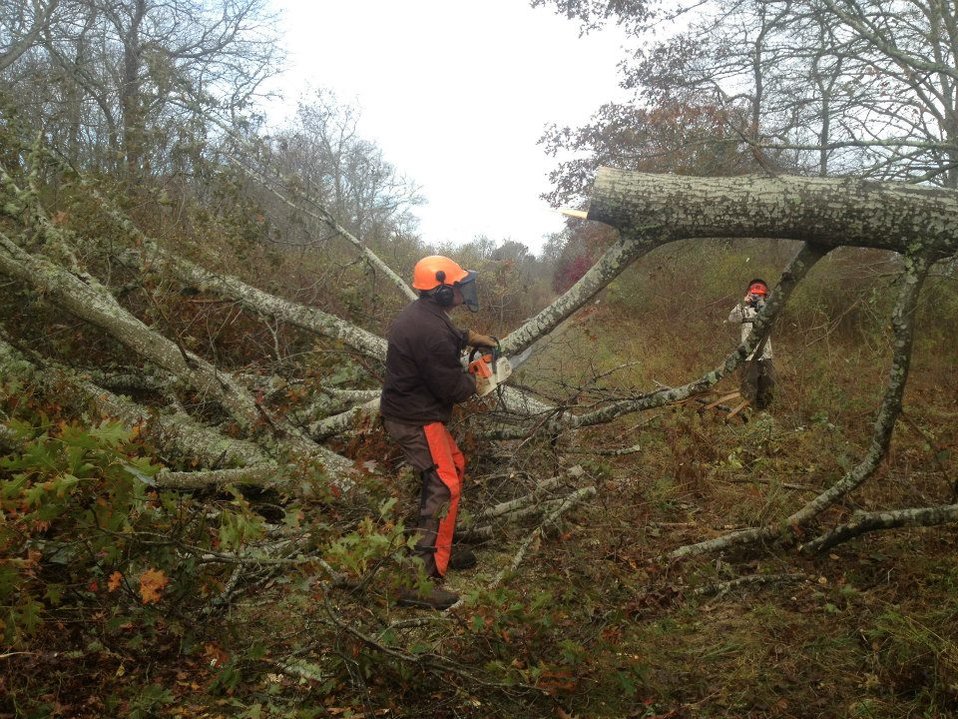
Trail clearing at the Ninigret National Wildlife Refuge (RI)

Service staff working to clear downed trees from trails at Ninigret NWR.